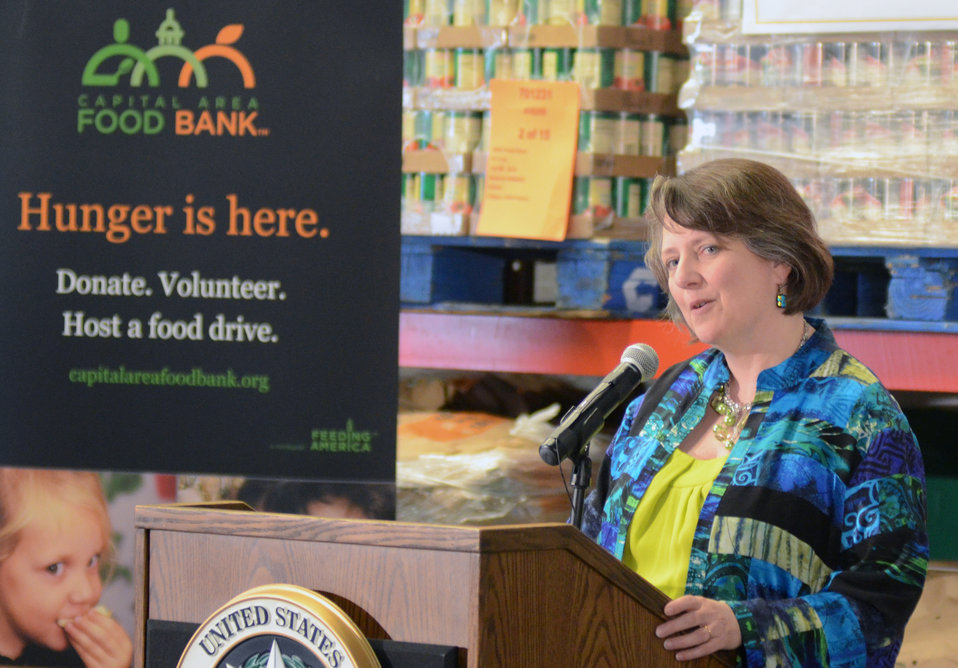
Agriculture Deputy Secretary Kathleen Merrigan makes remarks at the Feds Feed Families Kick-Off event at the Capital Area Food Bank (CAFB) in Washington, D.C., on Monday, June 11, 2012.